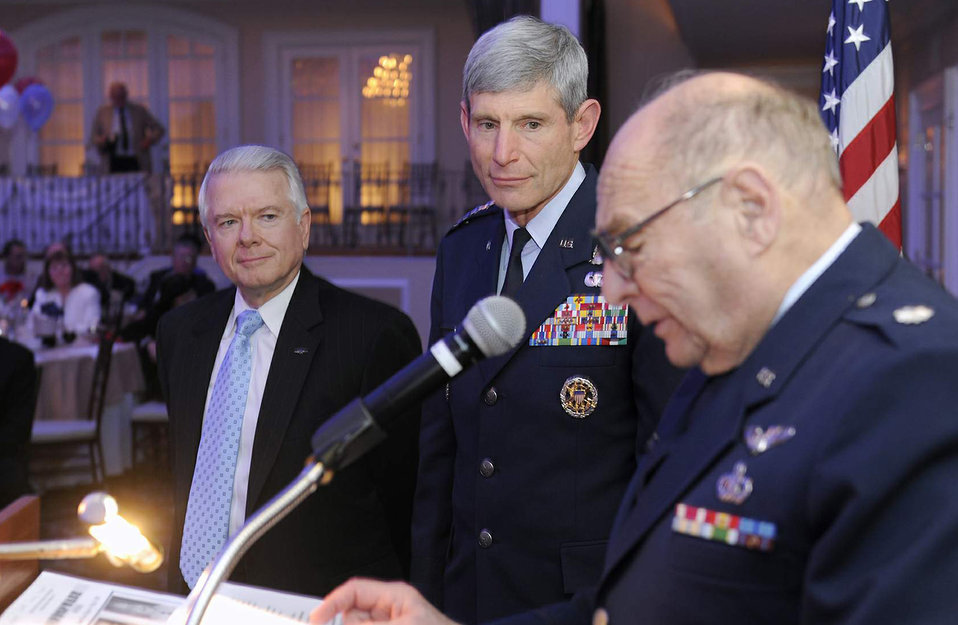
New Jersey Aviation Hall of Fame

Retired Lt. Col. Stephen Riethof, an inductee in the New Jersey Aviation Hall of Fame, reads a personal letter on behalf of Secretary of the Air Force Michael Donley to Air Force Chief of Staff Gen. Norton Schwartz May 11, 2011, during the New Jersey Aviation Hall of Fame induction ceremony in Teterboro, N.J.. Looking on is W. Timothy McSwain, a former president of the hall of fame. General Schwartz, who shared the spotlight with three other inductees, was also the keynote speaker at the ceremony.